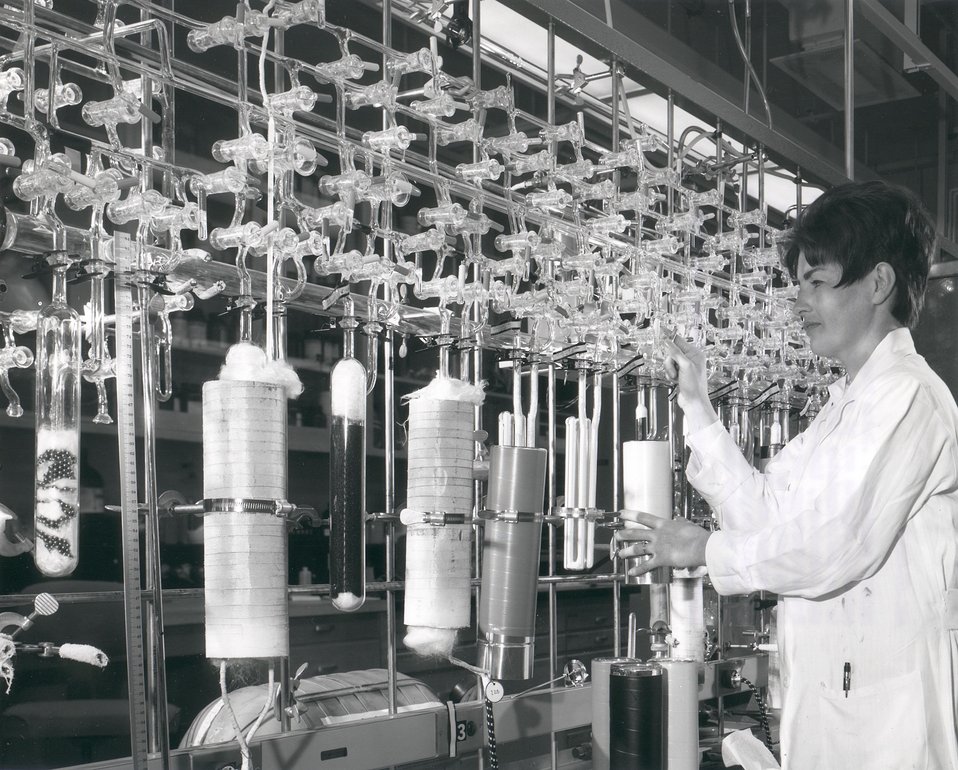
JoAnn Rego, chemistry apparatus operator, adjusts one of chromotographic gas columns in the Radiochemistry Laboratory, at the Lawrence Radiation Laboratory, Livermore, where samples from Project Gasbuggy are currently being studied. Circa 1968.